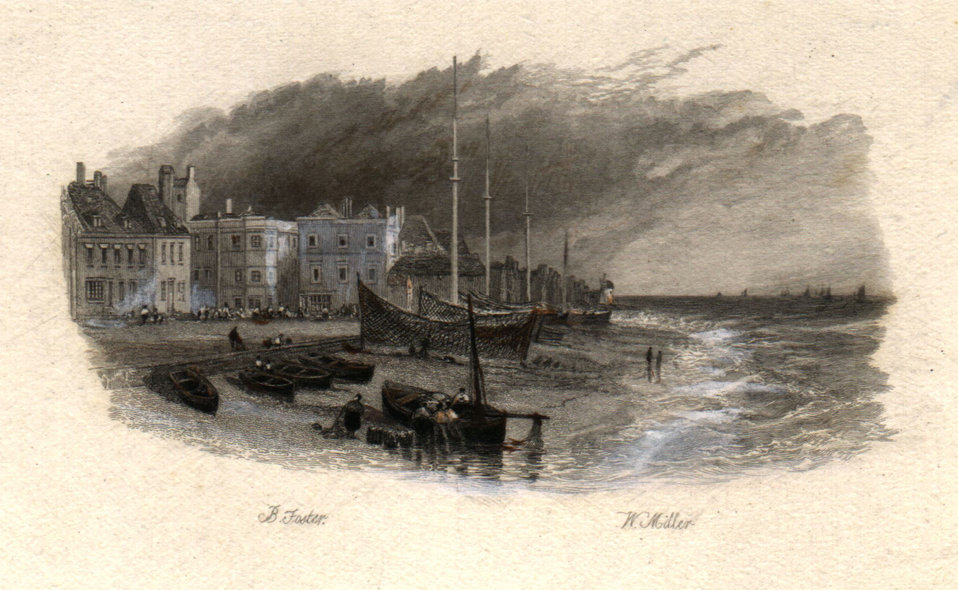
The Mermaid of Margate He was saved from the hungry deep by a boat of Deal', engraving by William Miller after Birket Foster, published in Hood's Poems p133, again illustrated by Birket Foster, E. Moxon, Son & Co., London 1872